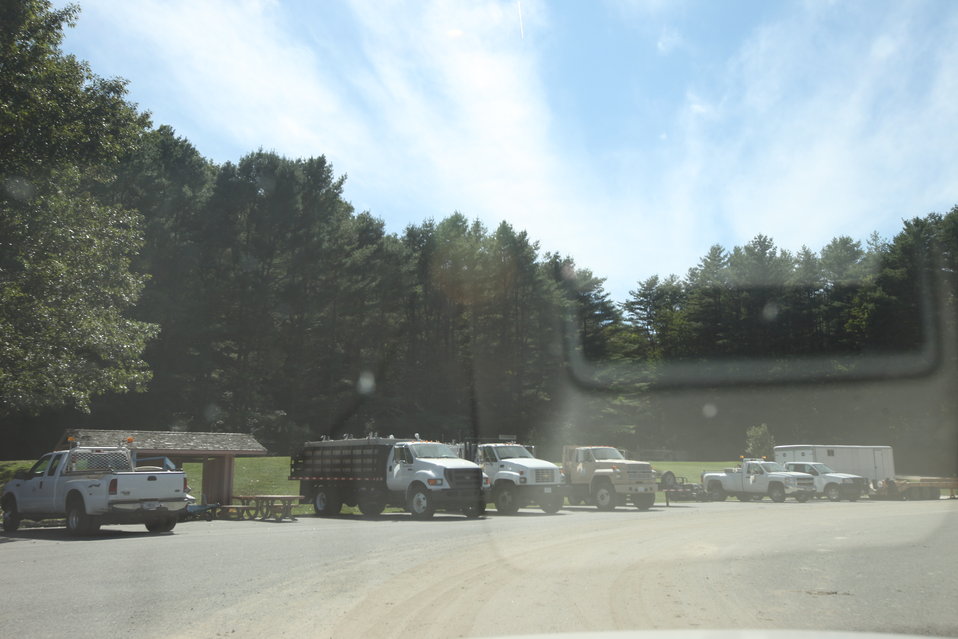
Storm damage relief at White River NFH

Heavy equipment operators came from other USFWS stations to help clean up.